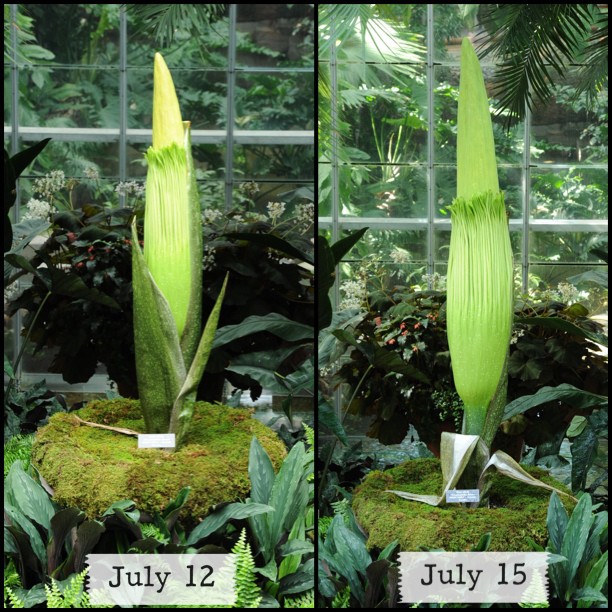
'Corpse Flower' nearing bloom, view at USBG today 10-8. #stinkyplant